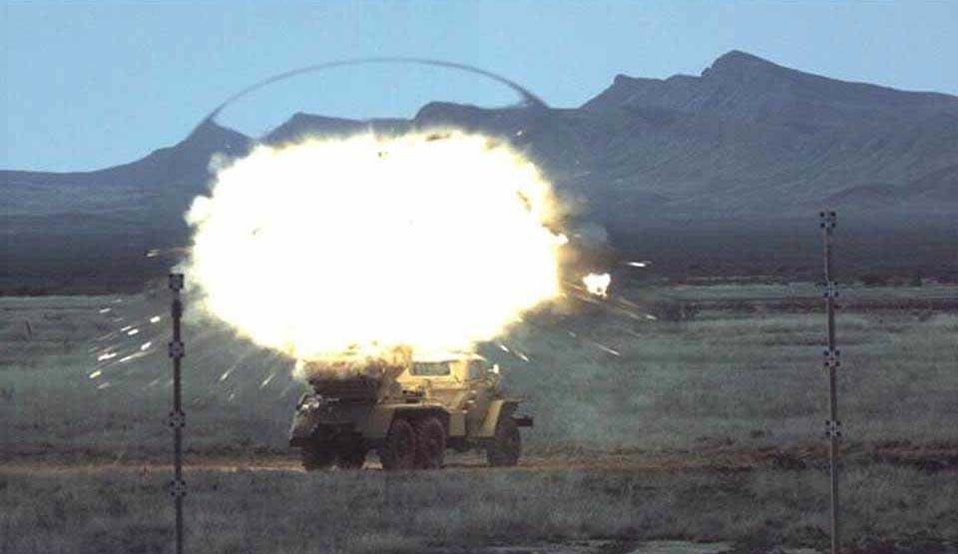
Small Diameter Bomb I delivered ahead of schedule

A GBU-39/B Small Diameter Bomb I strikes a BM-21 rocket launcher during a test at White Sands Missile Range, N.M., in 2005. SDB I will be integrated on the F-15E Strike Eagle first, and is being delivered to combat units through the world for use in the war on terrorism.